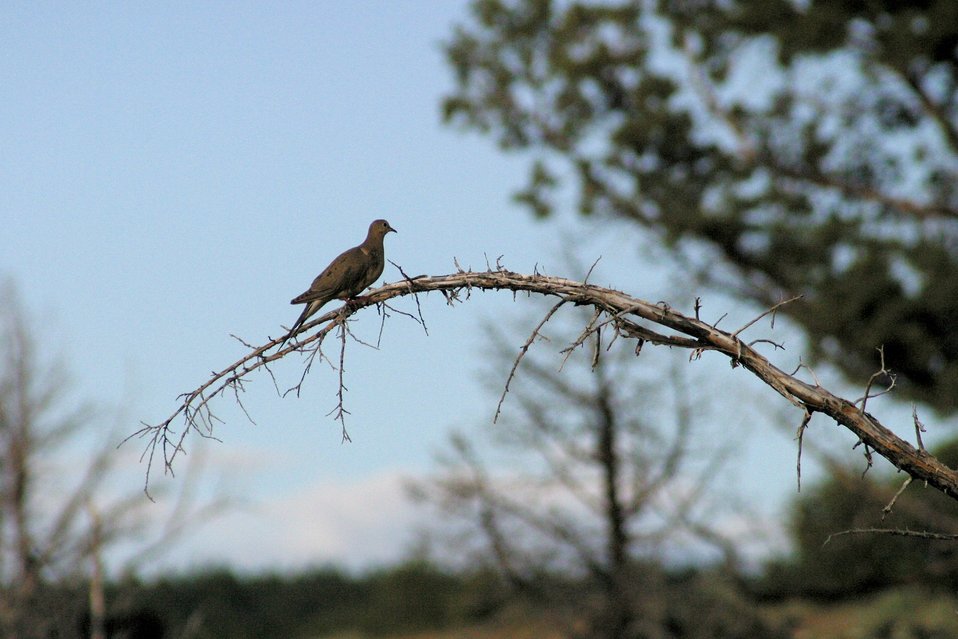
Dove in the Kiger Wild Horse Viewing Area.